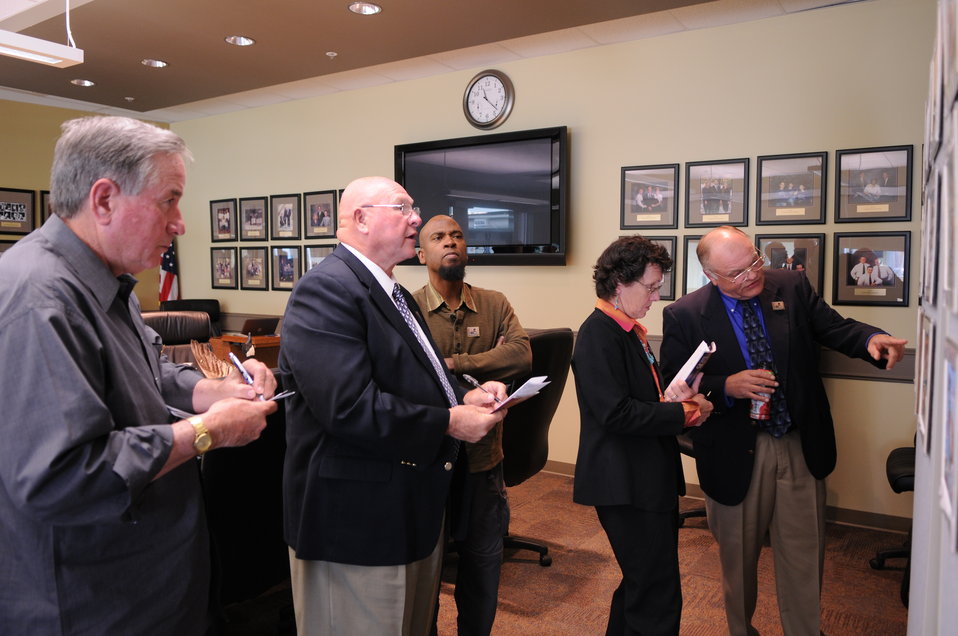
Judging

The U.S. Fish & Wildlife Service sponsored the 2012 Federal Duck Stamp Art Contest September 28 and 29 in Ogden, Utah, at Weber State University. A panel of five judges was responsible for choosing the art work used to design the 2013-2014 Migratory Bird Hunting and Conservation Stamp.